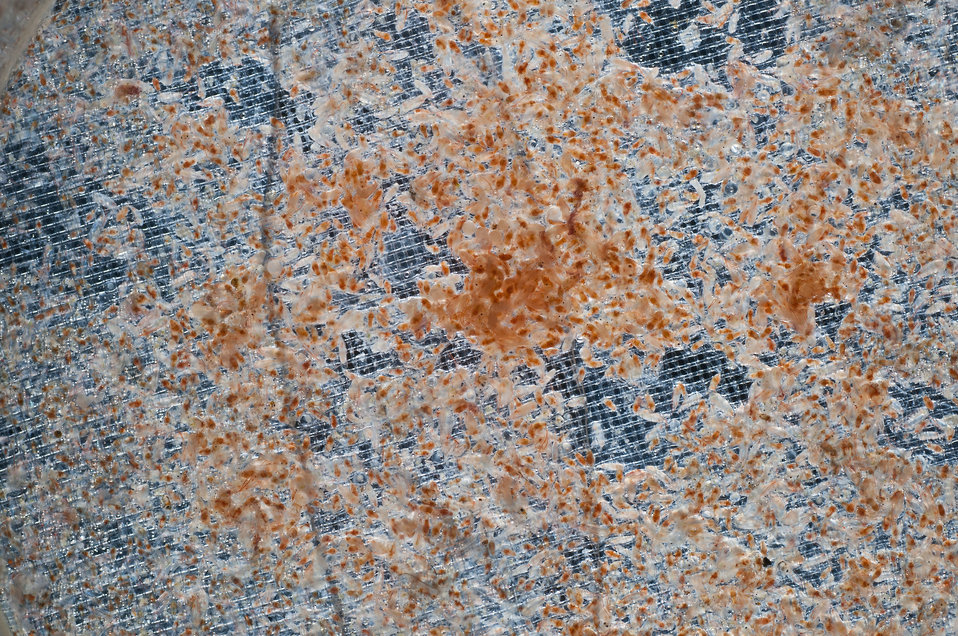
August 9, 2011 Zooplankton!

Tiny zooplankton caught in the 500 micrometer mesh cod end of the plankton net. Will be identified in the lab using a microscope.

These were collected in a 10 minute tow about 2 feet below the surface.